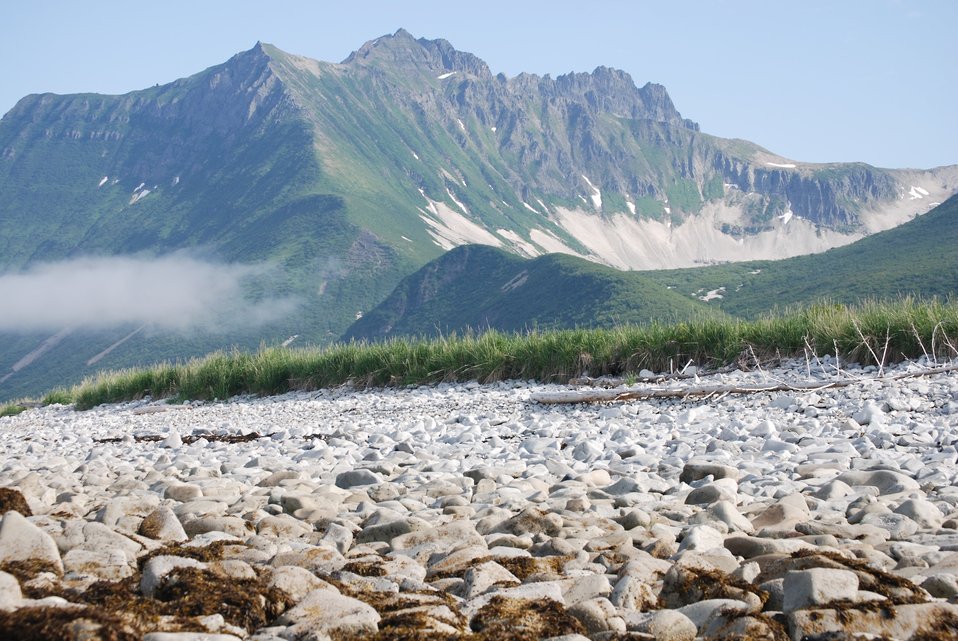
Looking over a boulder beach to rugged mountains of the Alaska Peninsula. Dakavak Bay.